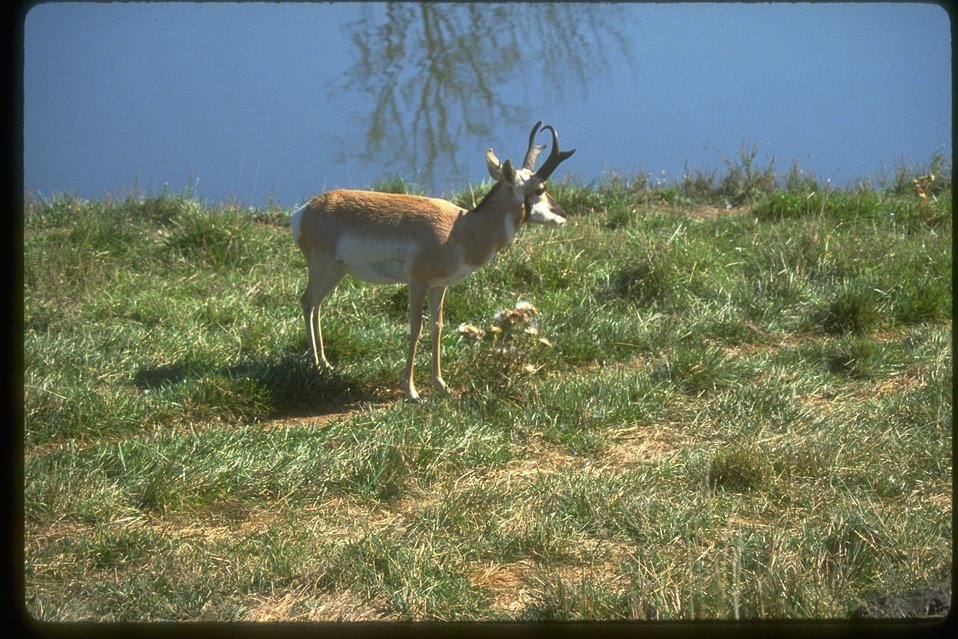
American Antelope.